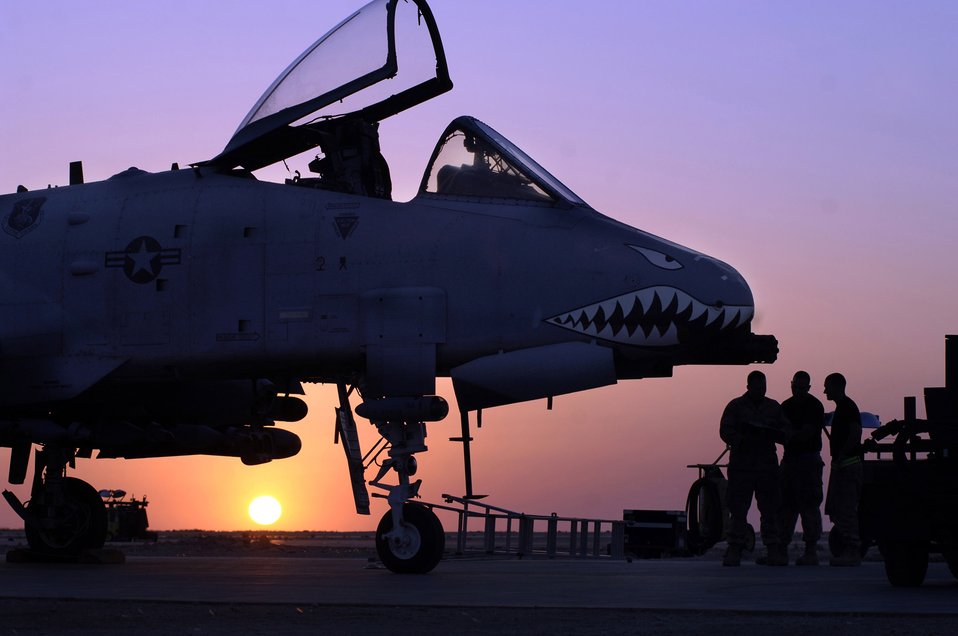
A-10 provides top cover for troops in Iraq

Senior Airman Joseph Cordero, Staff Sgt. Andrew House and Staff Sgt. Barrett Read trouble shoot an electronic error on an A-10 Thunderbolt II April 25 on the flightline at Al Asad Air Base, Iraq. The 438th Air Expeditionary Group A-10s perform 10 sorties daily providing top cover for ground forces in Iraq, with 900 sorties in this last four months. Airman Cordero's hometown is Beacon, N.Y. Sergeant House's hometown is Erwin, N.C. Sergeant Read's hometown is Redding, Calif.